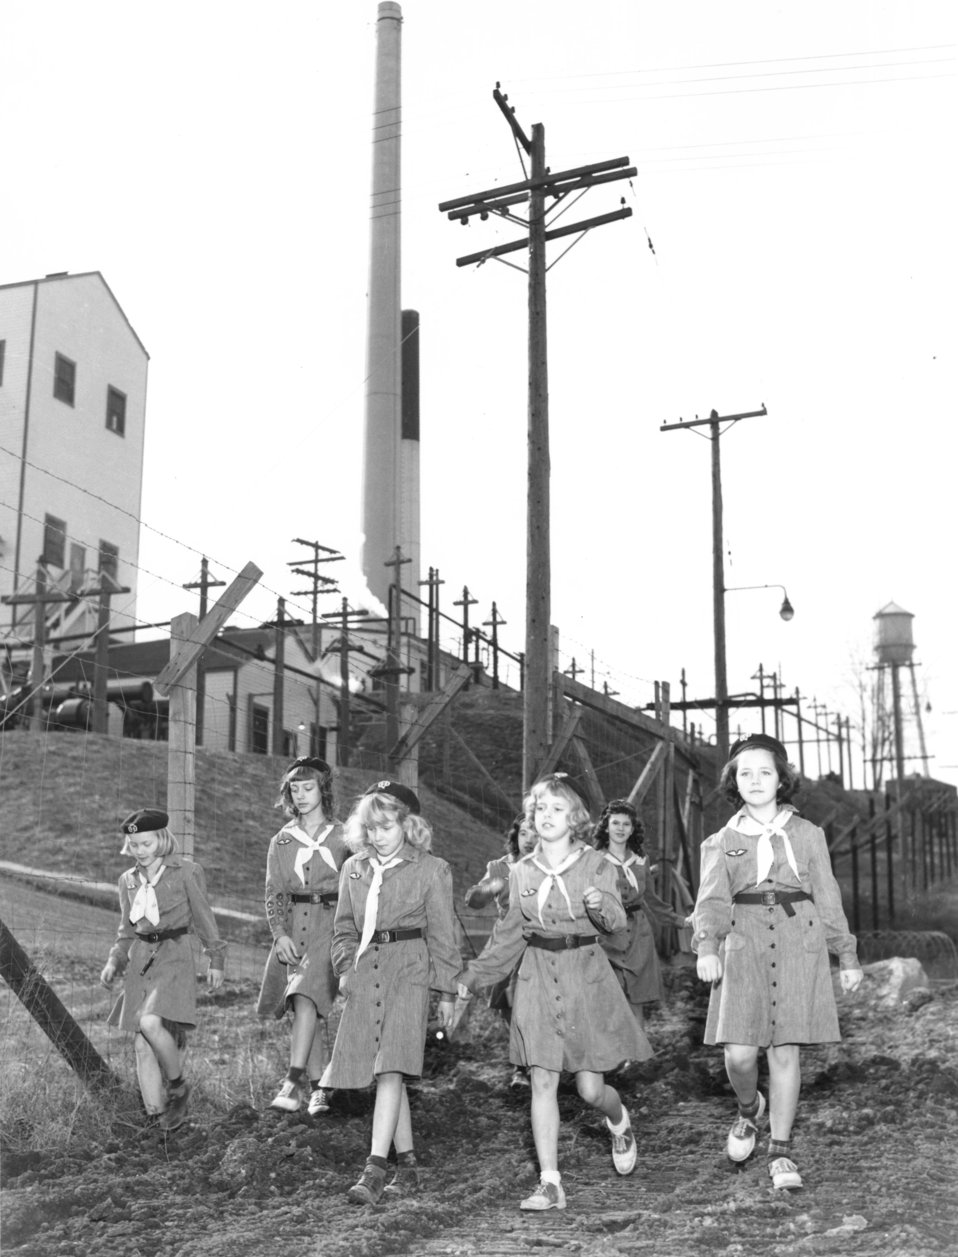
Recreation at Oak Ridge